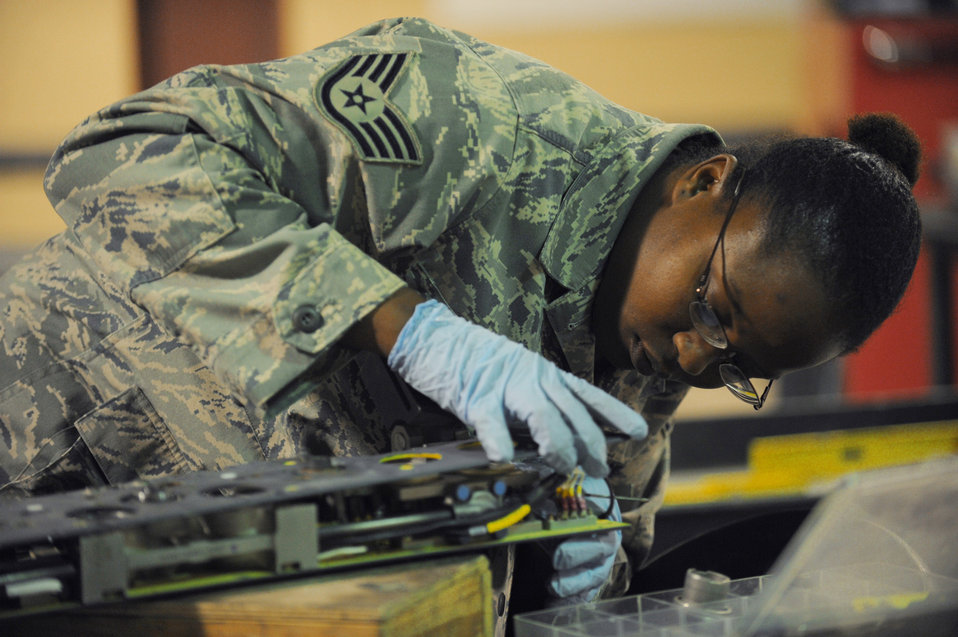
Weapons loaders arm jets for the fight

Staff Sgt. Kusan Barter inspects a piece of weapons release equipment for an F-16 Fighting Falcon June 29 at Joint Base Balad, Iraq. Sergeant Barter is a 332nd Expeditionary Aircraft Maintenance Squadron armament-systems craftsman, deployed from Spangdahlem Air Base, Germany, and is a native of Pensacola, Fla.